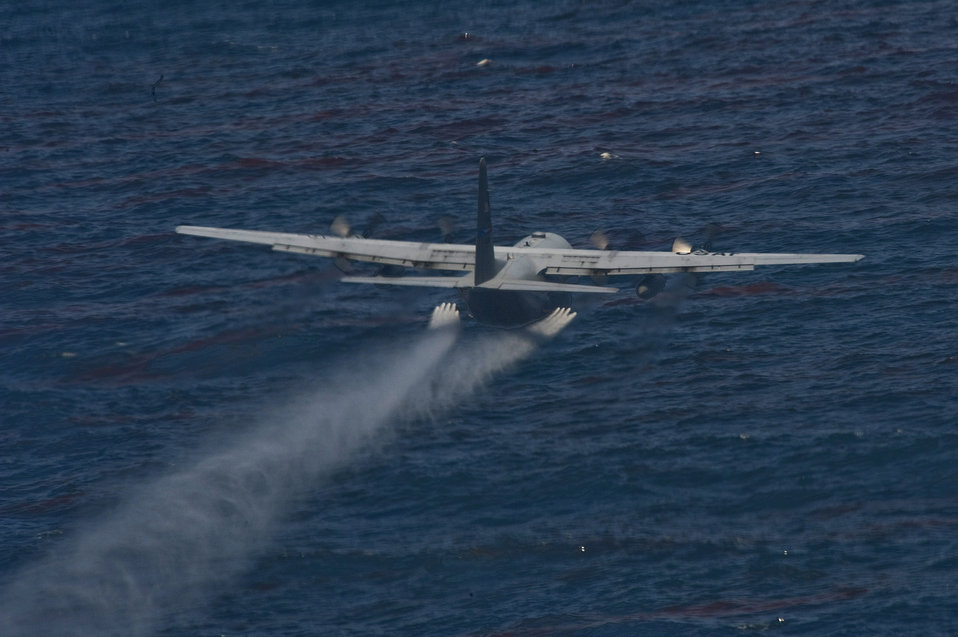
Deepwater Horizon Response

A C-130 Hercules aircrew drops an oil dispersing chemical May 5, 2010, into the Gulf of Mexico as part of the Deepwater Horizon Response effort. Members of the Air Force Reserve Command's 910th Airlift Wing are in Mississippi to assist with response to the Deepwater Horizon oil spill. The C-130 aircrew is from the 910th Airlift Wing at Youngstown-Warren Air Reserve Station, Ohio.